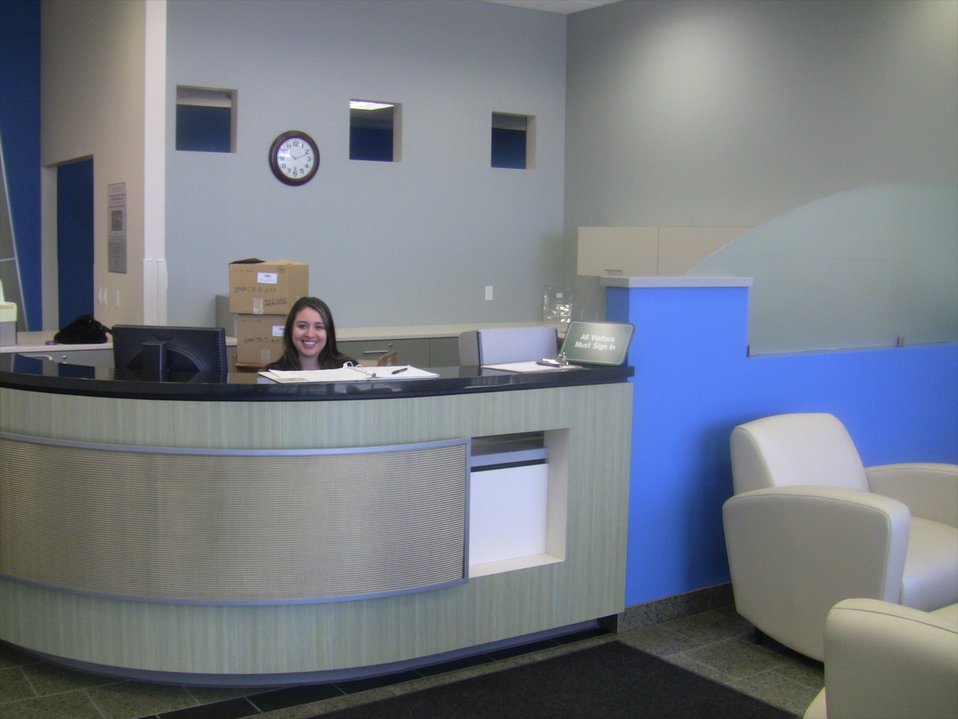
Francesca Ferand sitting at the front desk at the National Archives at Denver; Location: National Archives at Denver, Broomfield, CO